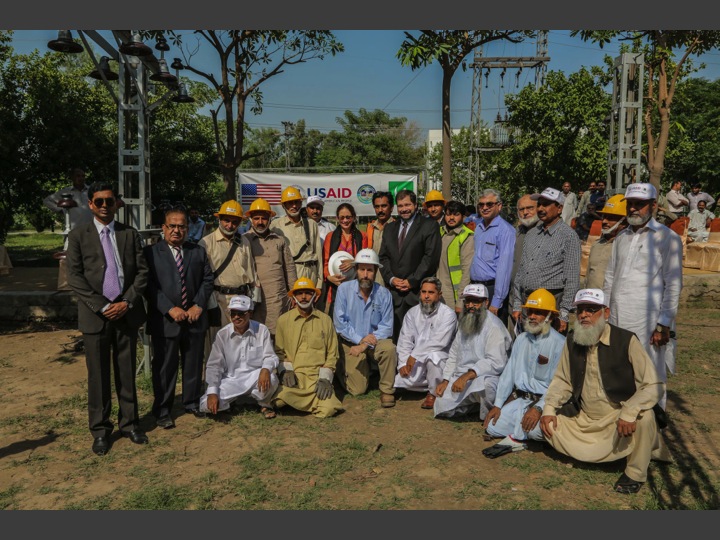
Trainees with LESCO officials, USAID representatives